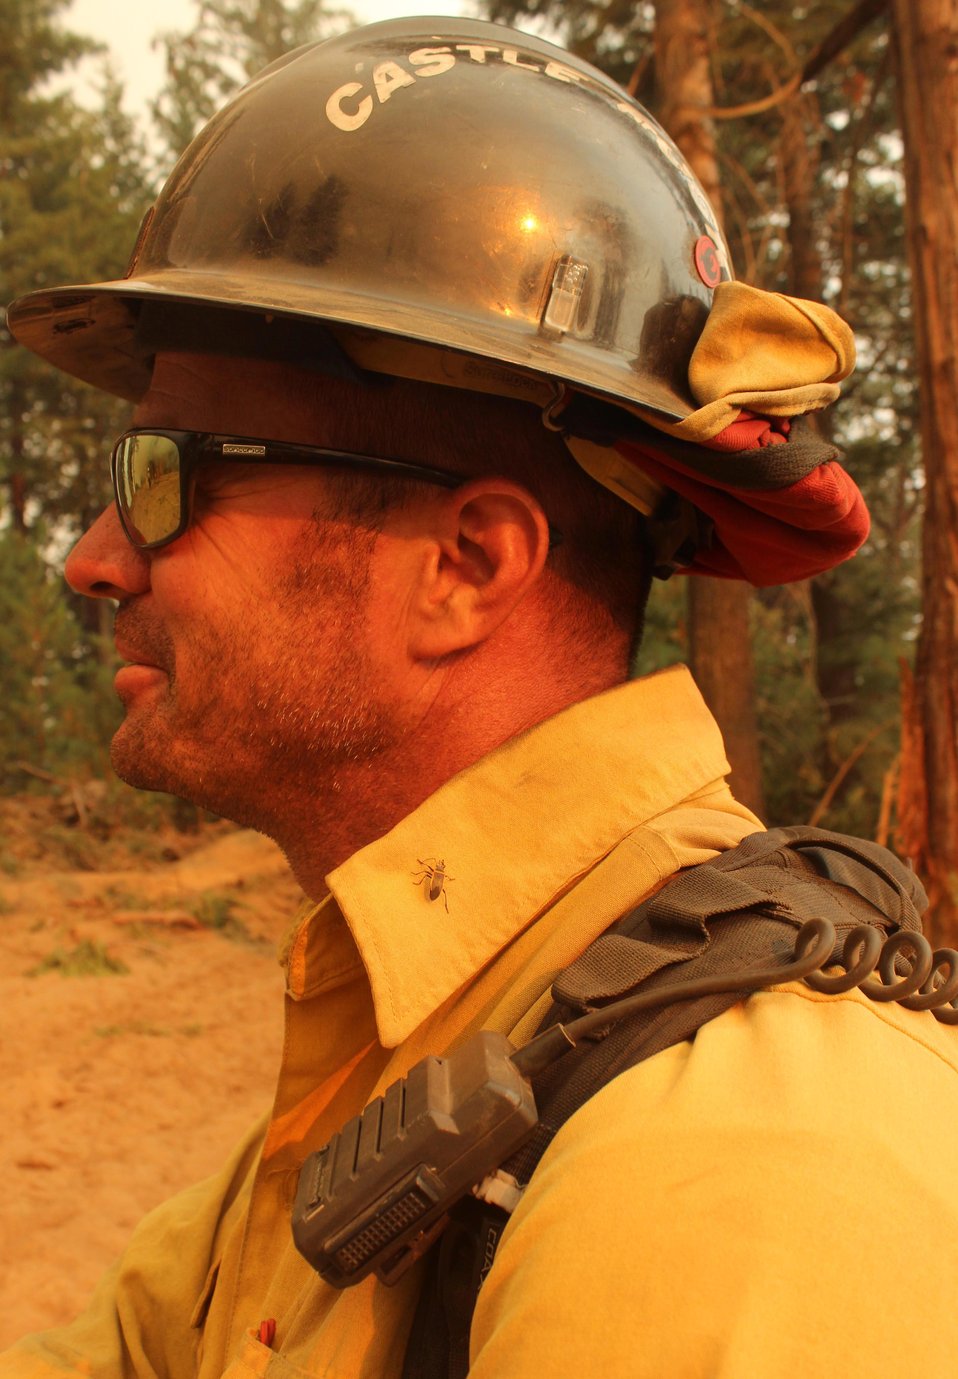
The sun rises on south flank firefighter Pat Richardson at the Rim Fire. The Rim Fire in the Stanislaus National Forest near in California began on Aug. 17, 2013 and is under investigation. The fire has consumed approximately 253,332 acres and is 80% contained.